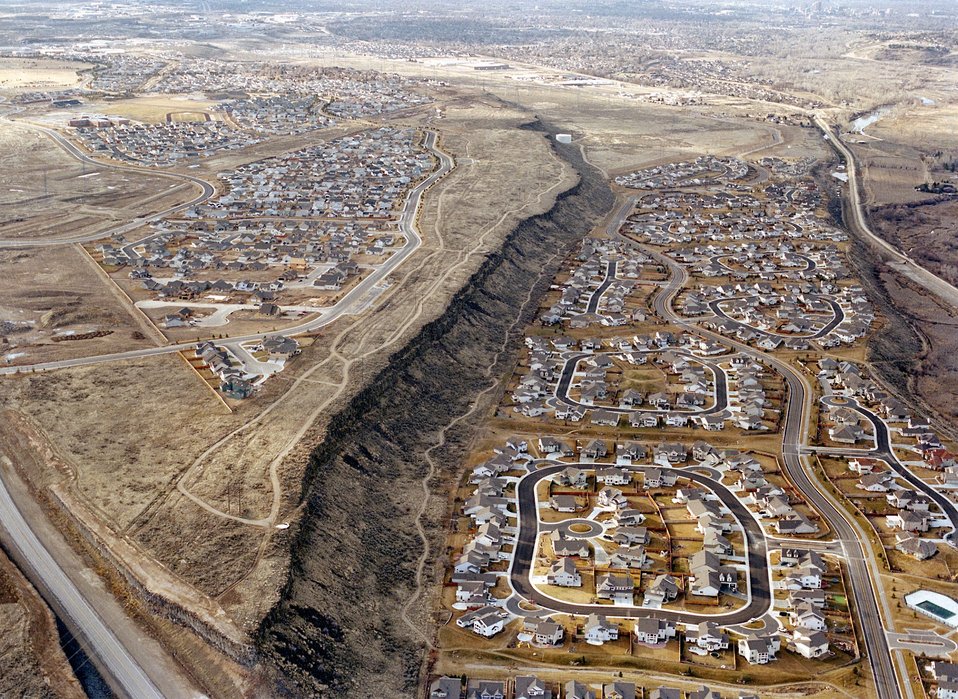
Recreation on the Boise Front Foothills Aerial Four Rivers Field Office LSRD Lower Snake River District